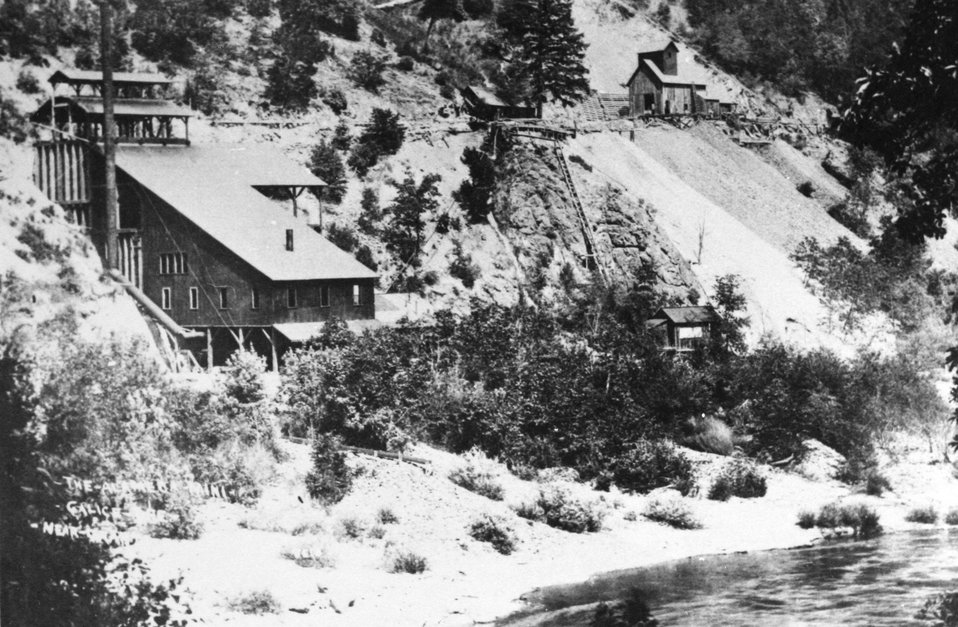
Almeda mine C. 1910 - 1911. The shaft house can be seen in the upper right of the picture.